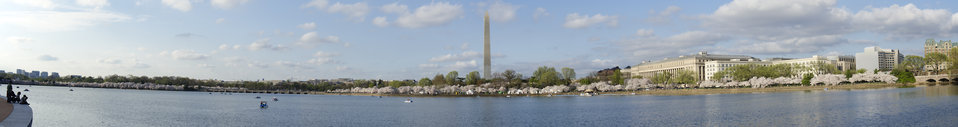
(For best viewing, download 'original' size) Virtual panorama, using 11 photos taken within one minute, from Jefferson Memorial, Washington, D.C., on Tuesday, March 20, 2012. This is the peak day for the 2012 Cherry Blossom season. Higher resolution photo available.